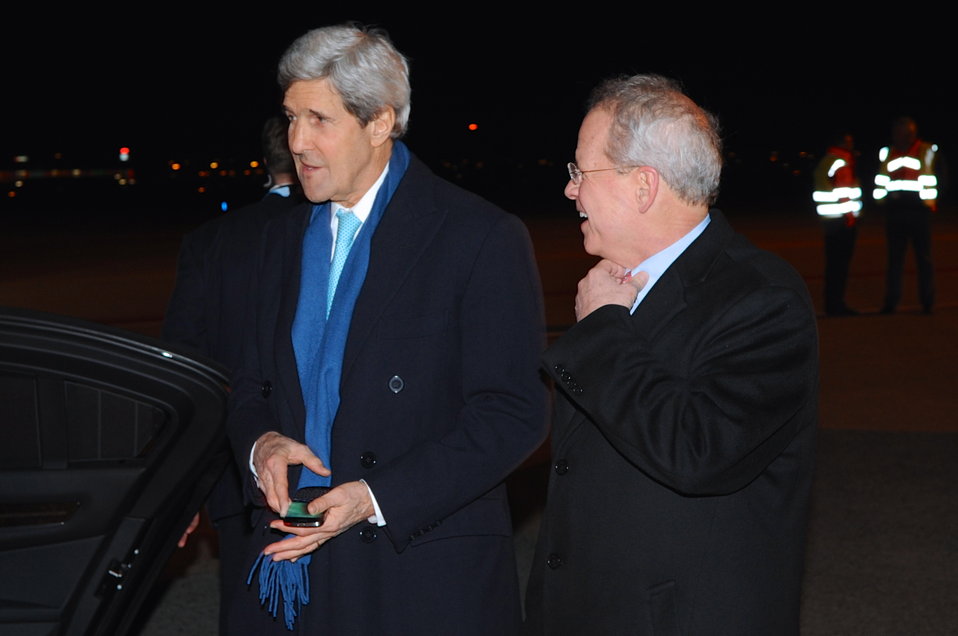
Ambassador Broas Greets Secretary Kerry Upon Arrival in Amsterdam

U.S. Ambassador to the Netherlands Timothy Broas greets U.S. Secretary of State John Kerry upon his arrival in Amsterdam on March 23, 2014, at the outset of a trip on which he will accompany President Obama to The Hague, Rome, Italy, and Riyadh, Saudi Arabia.